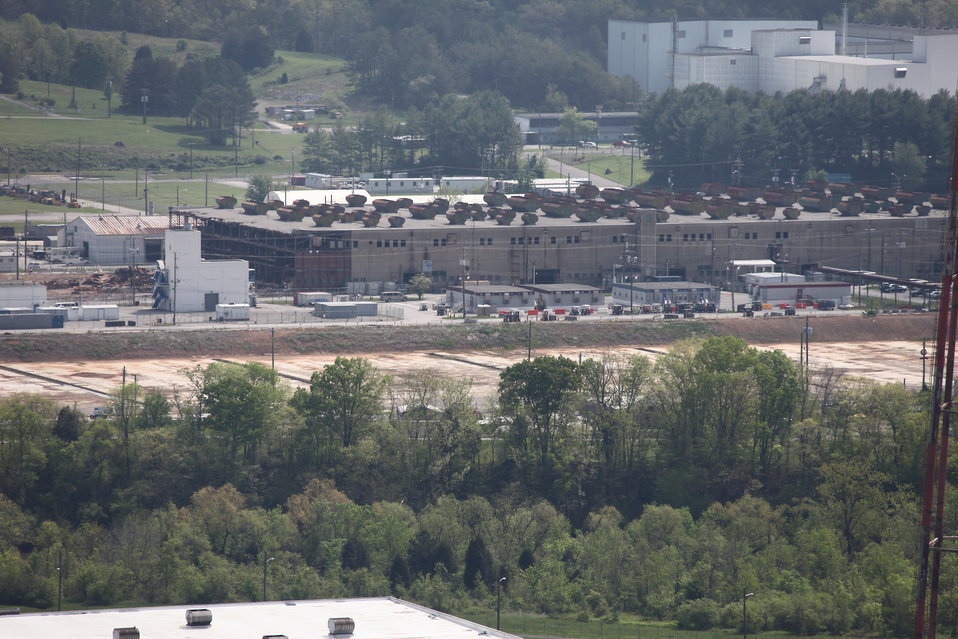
ETTP